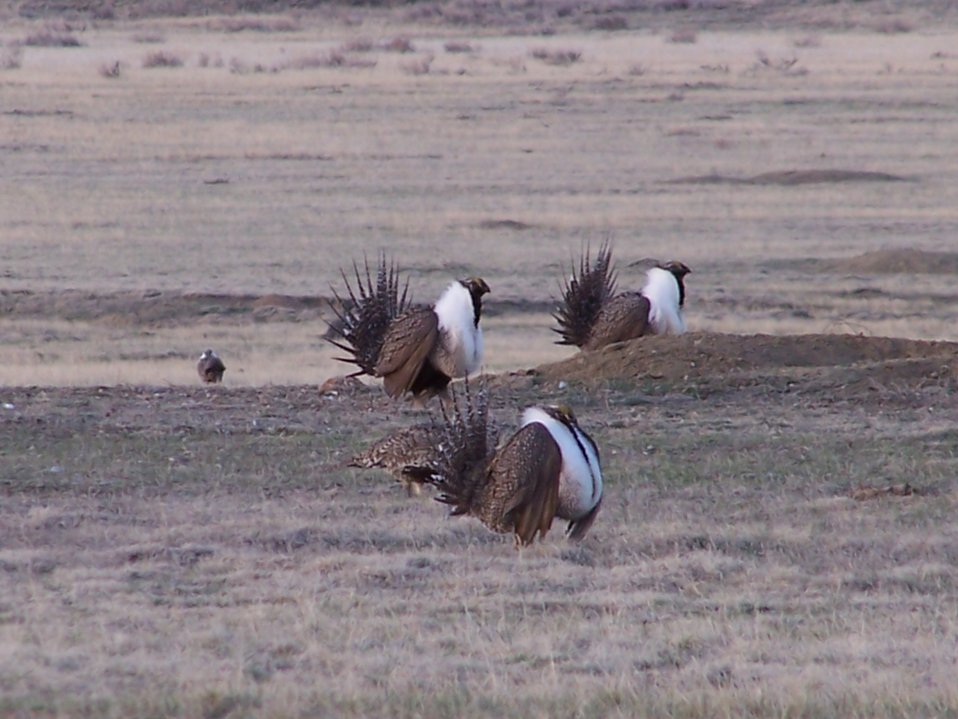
Greater Sage-grouse, Bowdoin WMD

Greater Sage-grouse on lek in spring. Males display to attract females in open, designated areas called leks, or dancing grounds. Bowdoin WMD.